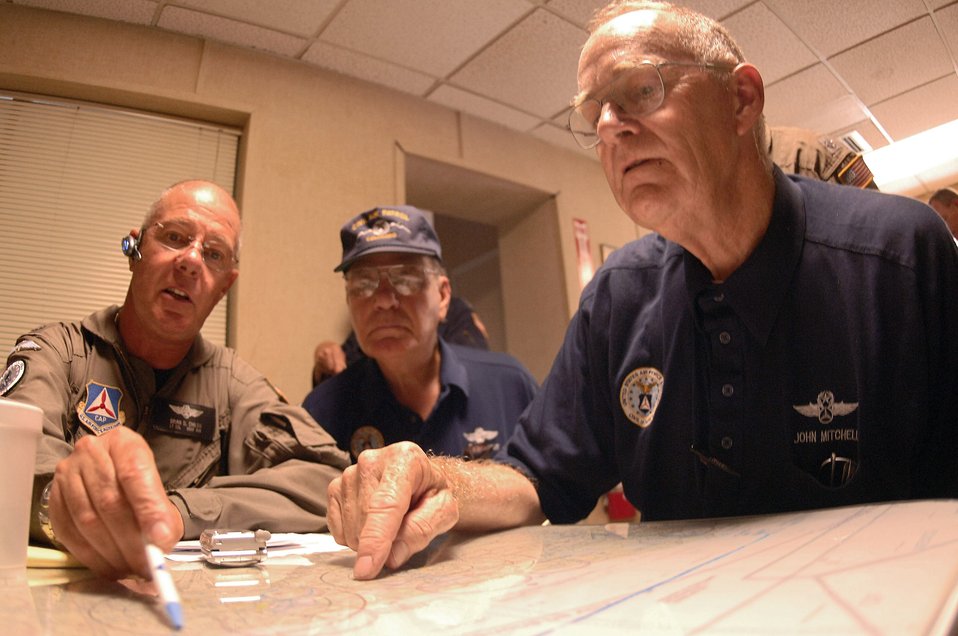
Civil Air Patrol responds

HOUSTON -- Lt. Col. Brian Childes (left) briefs Lt. Col. Bob Beabout (center) and Maj. John Mitchell (right) before a reconnaissance mission over Sabine Lake, Texas. Civil Air Patrol pilots from across the nation came to the West Houston Airport to support the assessment of Hurricane Rita's impact. By the end of Sept. 26, they completed 50 sorties, providing photo reconnaissance of potential damage, oil spills, traffic congestion, flood assessment and live multispectral imagery for state and federal agencies.